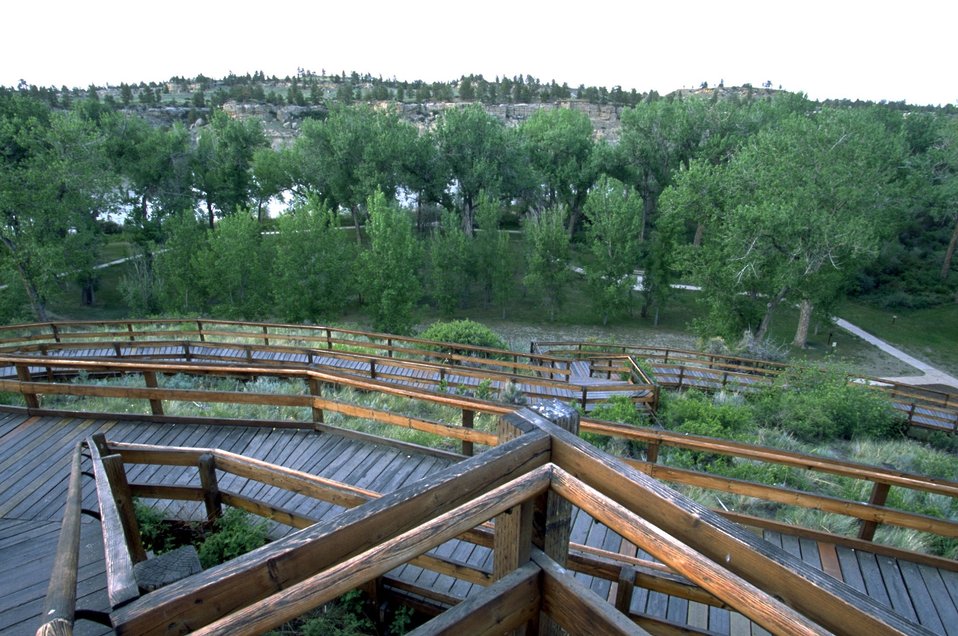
View of the Boardwalk that leads to the Signature area on Pompeys Pillar National Monument - Trees and Yellowstone River in the background